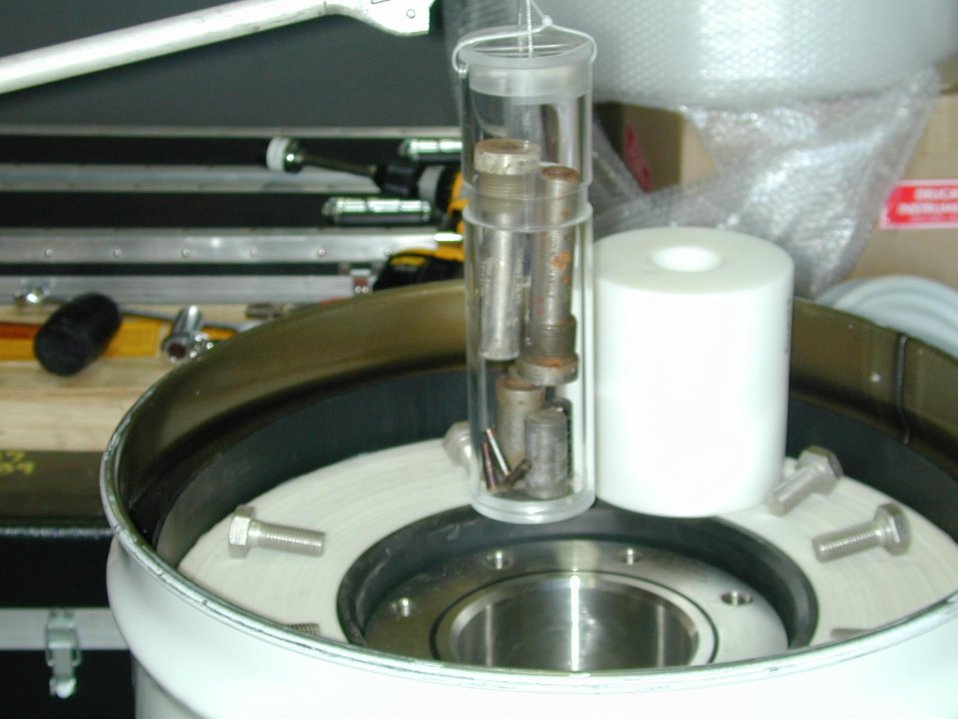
A PIPE OVERPACK CONTAINER, DEVELOPED AT LANL FOR THE OFFSITE RECOVERY PROJECT AT DOE'S ALBUQUERQUE OPERATIONS OFFICE.

THE OVERPACK CONTAINER, DEVELOPED TO IMPROVE NEUTRON SOURCE MANAGEMENT, HAS HIGH-DENSITY POLYETHYLENE NEUTRON SHIELDING. THE OSR PROJECT USES THE S100 DRUM TO CONSOLIDATE AND STORE HUNDREDS OF NEUTRON SOURCES CONTAINING AMERICIUM-141 AND PLUTONIUM-238 AND -239 WHICH IS PREPARED FOR TRANSPORT TO DOE'S WASTE ISOLATION PILOT PLANT IN TRUPACT II CONTAINERS. USING THE OVERPACK CONTAINER, WITH TOP AND BOTTOM SHIELDING IN PLACE, THE COMPLETE ASSEMBLY WEIGHS 328 POUNDS.